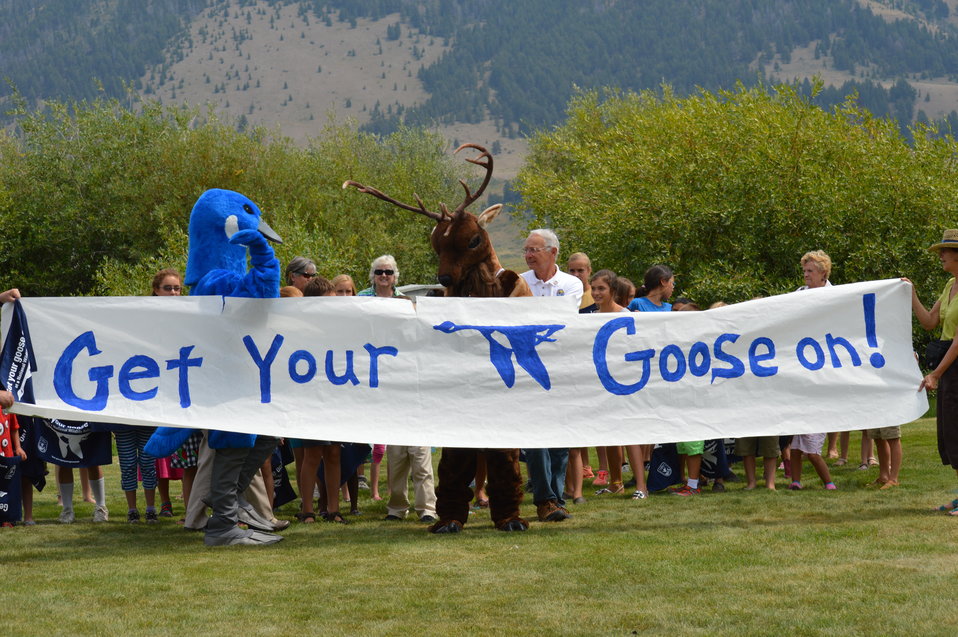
Get Your Goose On! - National Elk Refuge Style

On August 10, 2012 the U.S. Fish and Wildlife Service and Partners celebrated the 100 year anniversary of the establishment of the National Elk Refuge. In these photos, young attendees, along with Puddles the Blue Goose and the National Elk Refuge's mascot, showed us how to Get Your Goose On! with style.